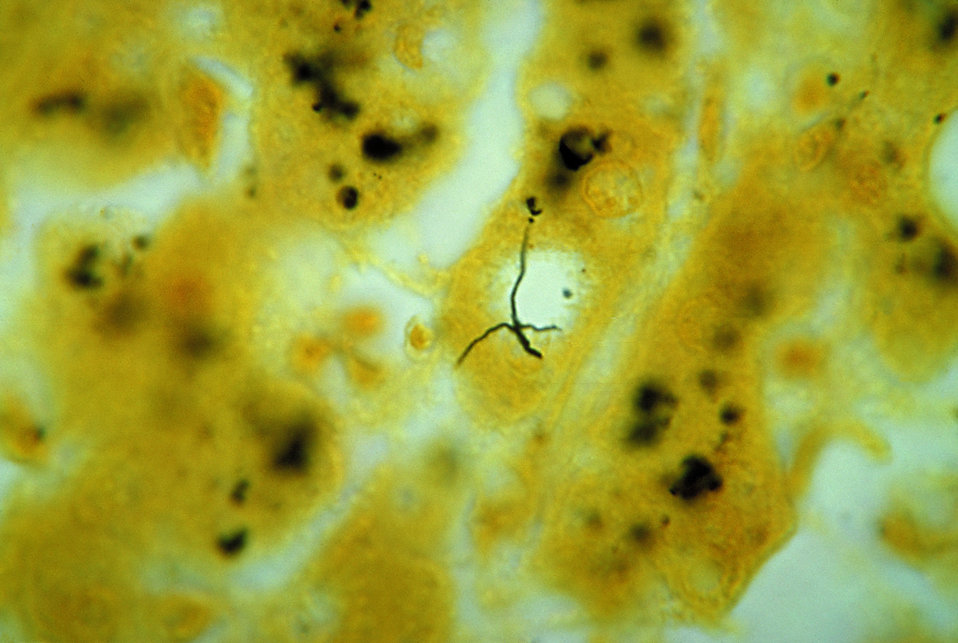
Photomicrograph of liver tissue revealing the presence of Leptospira bacteria.